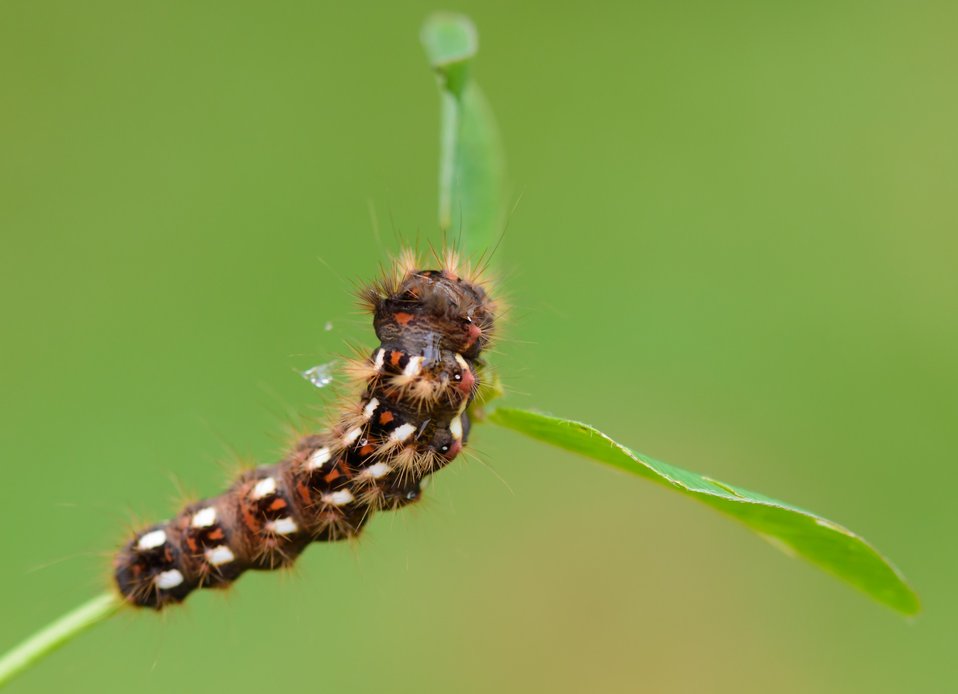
At the end of the road

Caterpillar on the road of life.